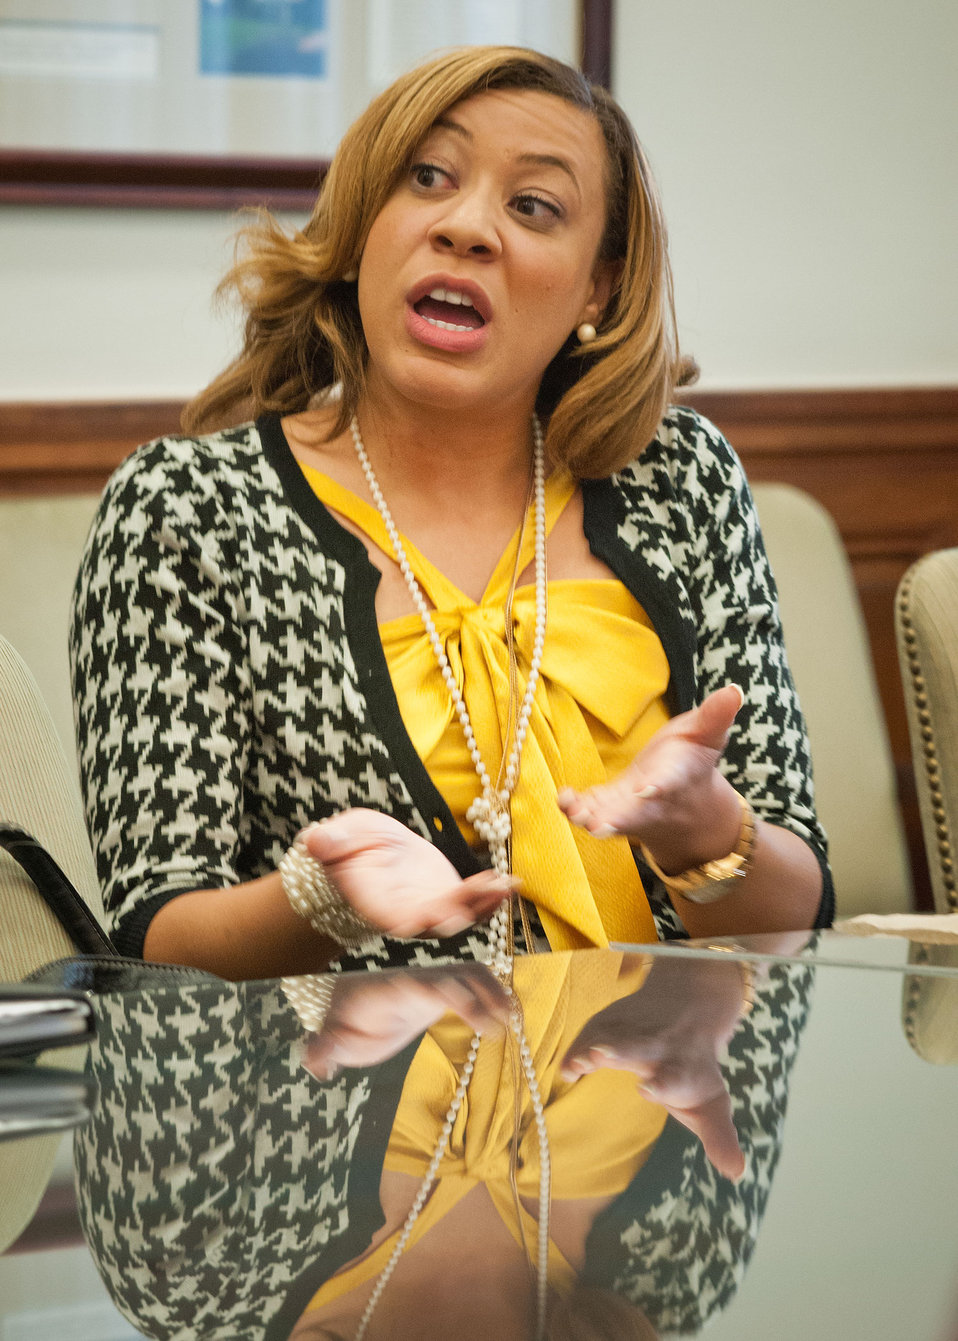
U.S. Department of Agriculture (USDA) Agriculture Research Service (ARS) Program Analyst Tracy Troutman had the opportunity with other USDA employees to discuss the roles they play within the Department at a Brown Bag Lunch held with Agriculture Secretary Tom Vilsack in Washington, D.C. Wednesday, Sept. 26, 2012. Secretary Vilsack holds the occasional Brown Bag Lunches to gain information and knowledge to assist in the administration of the affairs and programs of the Department, and to thank the employees for their diligent work to the Department and as public servants.